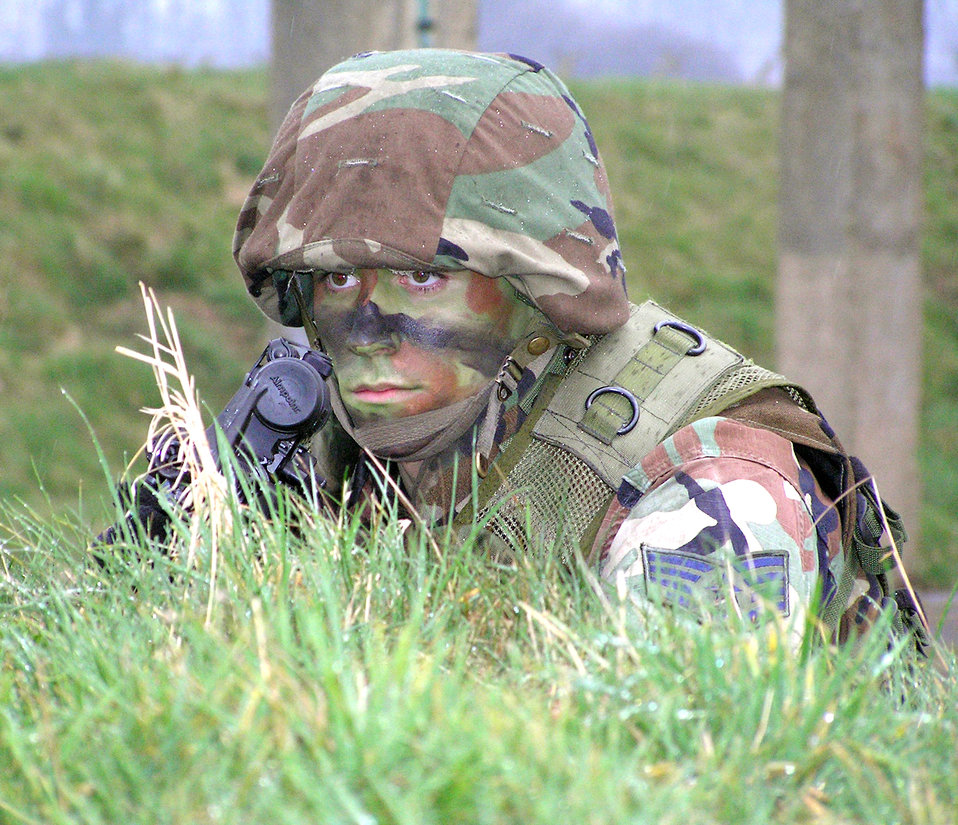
Mildenhall security forces receive realistic deployment training

ROYAL AIR FORCE MILDENHALL, England -- Staff Sgt. Ryan Cole surveys the area after setting up security around a halted convoy at the training complex here during combat readiness force training. The sight cap was intentionally left on the weapon to protect the sight from bad weather damage during the weeklong training. Sergeant Cole is assigned to the 100th Security Forces Squadron.